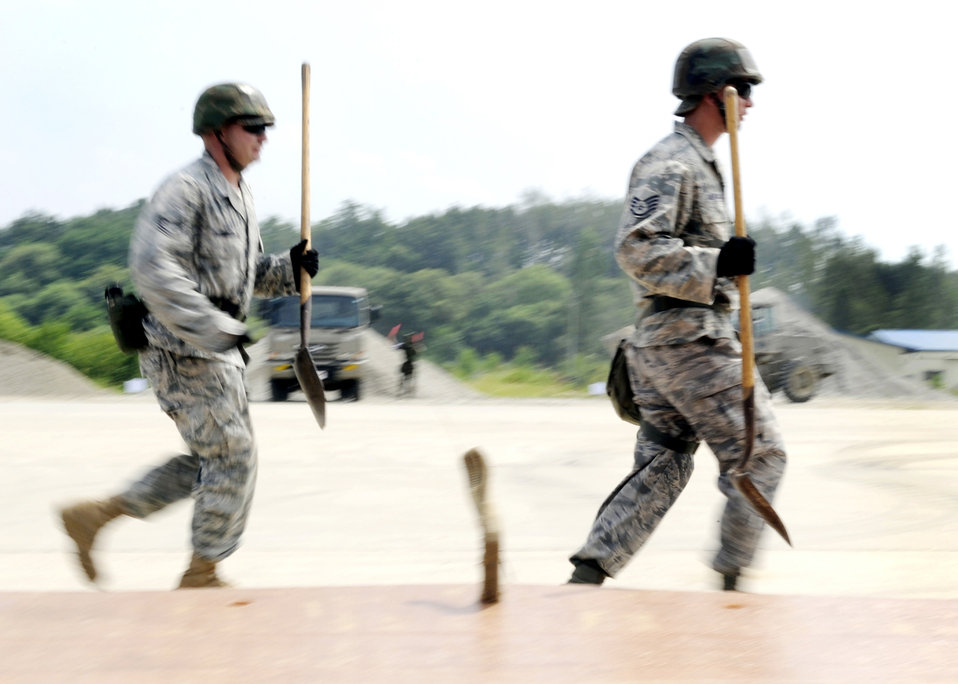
Osan AB's airfield damage repair team train with South Korean air force

Tech. Sgt. Robert Barnett (left) and Staff Sgt. Tony Anderson run to assist in moving of a folded fiberglass mat Aug. 19 at Jungwon Air Base, South Korea. The Airmen are a part of a joint combined rapid runway repair training exercise with Airmen from the South Korean air force's 19th Tactical Fighter Wing and 91st Air Civil Engineer Group. Sergeants Anderson and Barnett are assigned to the 51st Civil Engineer Squadron at Osan Air Base, South Korea.